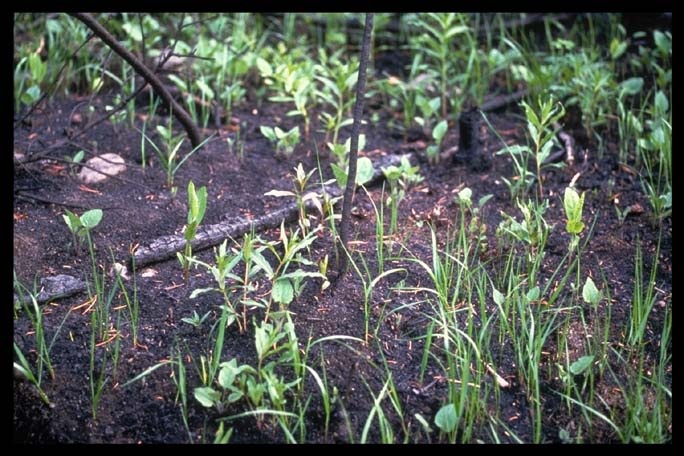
Regrowth